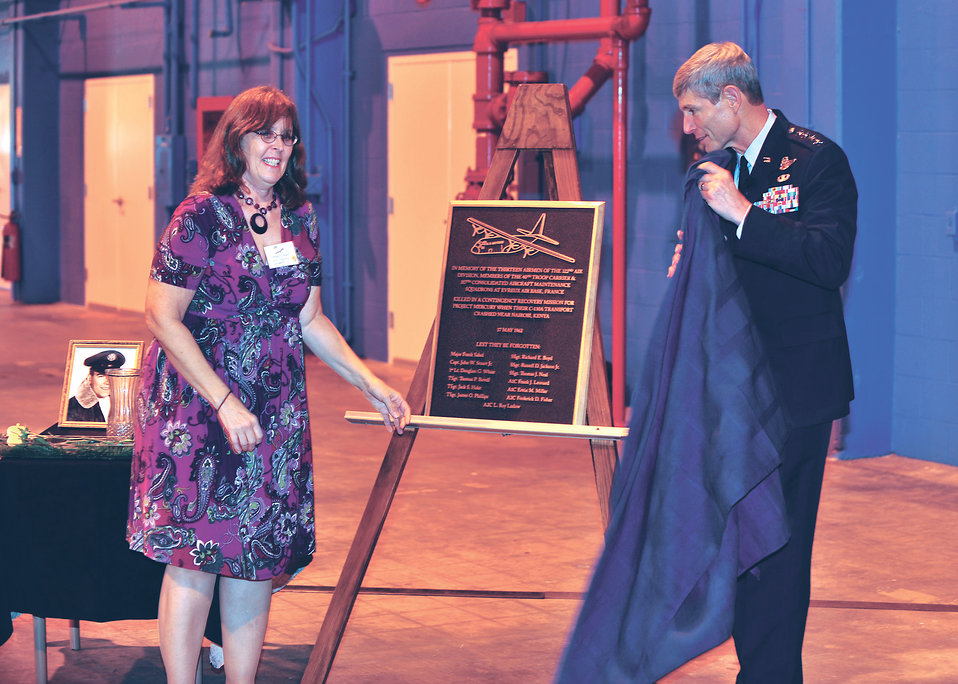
CSAF honors fallen Airmen in moving ceremony

Air Force Chief of Staff Gen. Norton Schwartz and Elizabeth Stuart, daughter of Capt. John W. Stuart, Jr., unveil a plaque bearing the names of her father and 12 other Airmen killed in an airplane crash May 17, 1962. while supporting NASA's Mercury mission. General Schwartz traveled to Cape Canaveral Air Force Station, Fla., Oct. 23, 2009, to participate in the ceremony to honor the fallen Airmen.